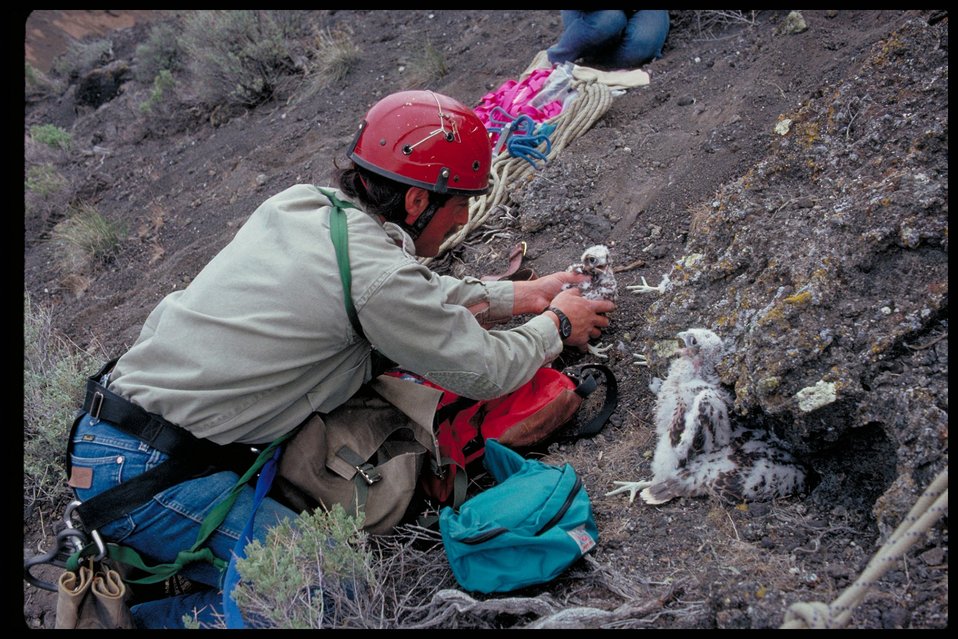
Birds of Prey National Conservation Area BOP Owyhee Field Office LSRD Lower Snake River District